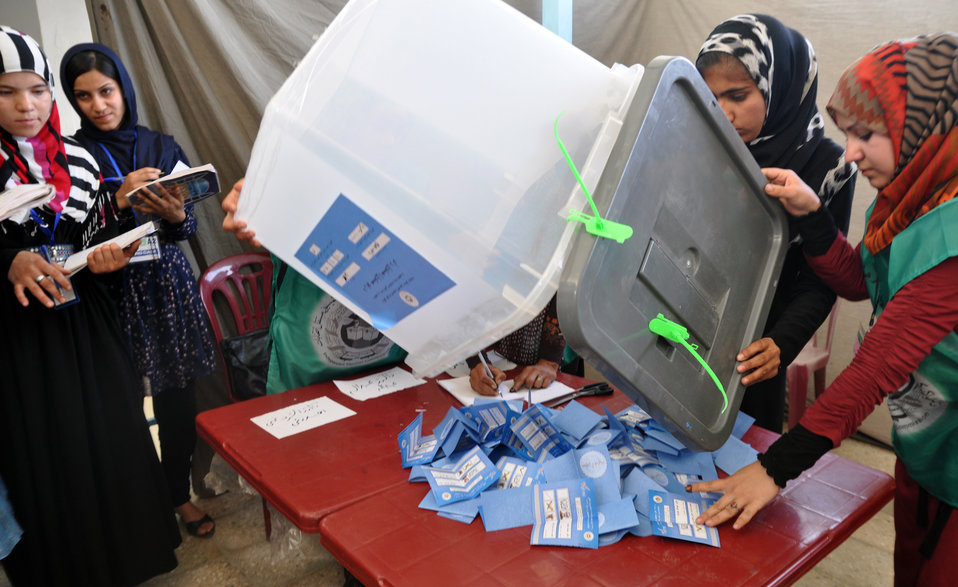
IEC workers open ballot box for counting ballots in Kabul.